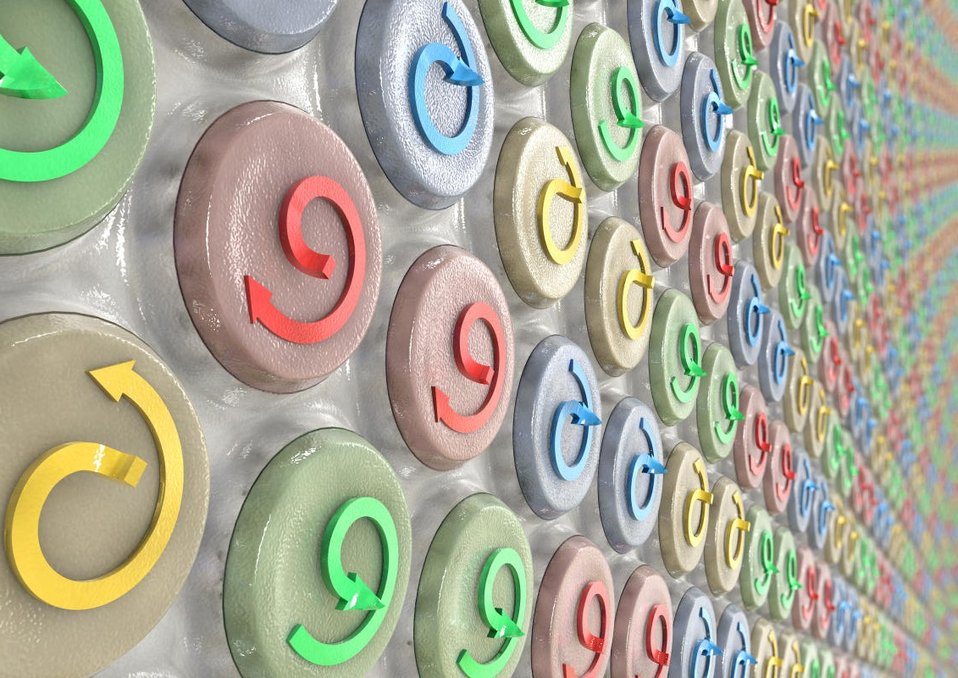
Controlling Chaos with Magnetic Fields

This artistic rendition of 'spin vortices' illustrates tiny magnetic vortices that spin according to the polarization of each disk's vortex core. At Argonne National Laboratory, scientists are using alternating magnetic fields to control the behavior of these spin vortices, which are small dots made of iron and nickel. The experiments will help to create new, more efficient magnetic devices -- like the random access memory (RAM) in the device you are using to look at this very photo.